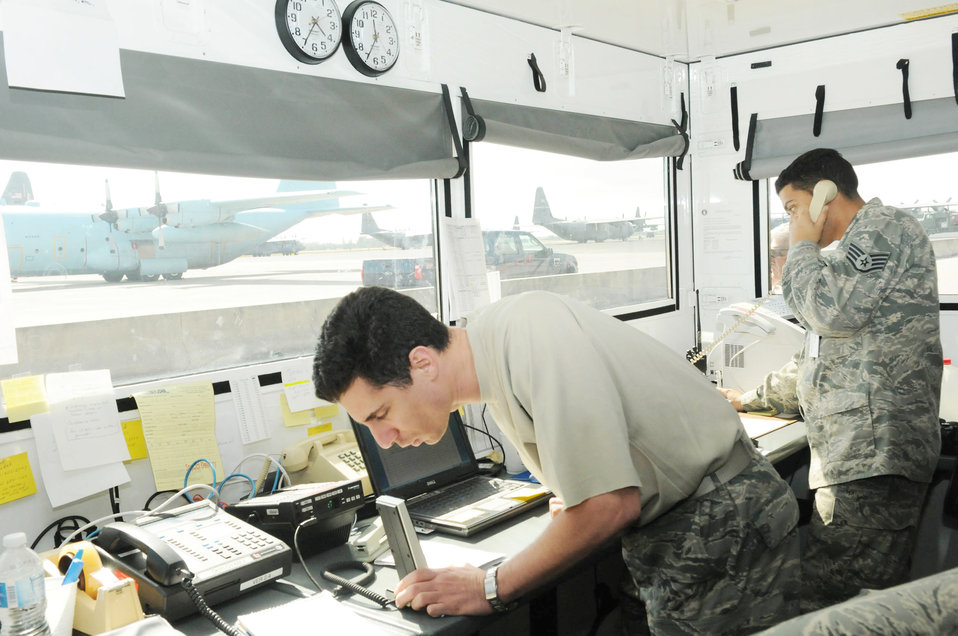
Operation Unified Response

Staff Sgt. Johnathan Concepcion tracks flights moving in and out of Homestead Air Reserve Base, Fla., heading to Haiti Jan. 23, 2010. Sergeant Concepcion is a command and control technician assigned to the 512th Airlift Control Flight.